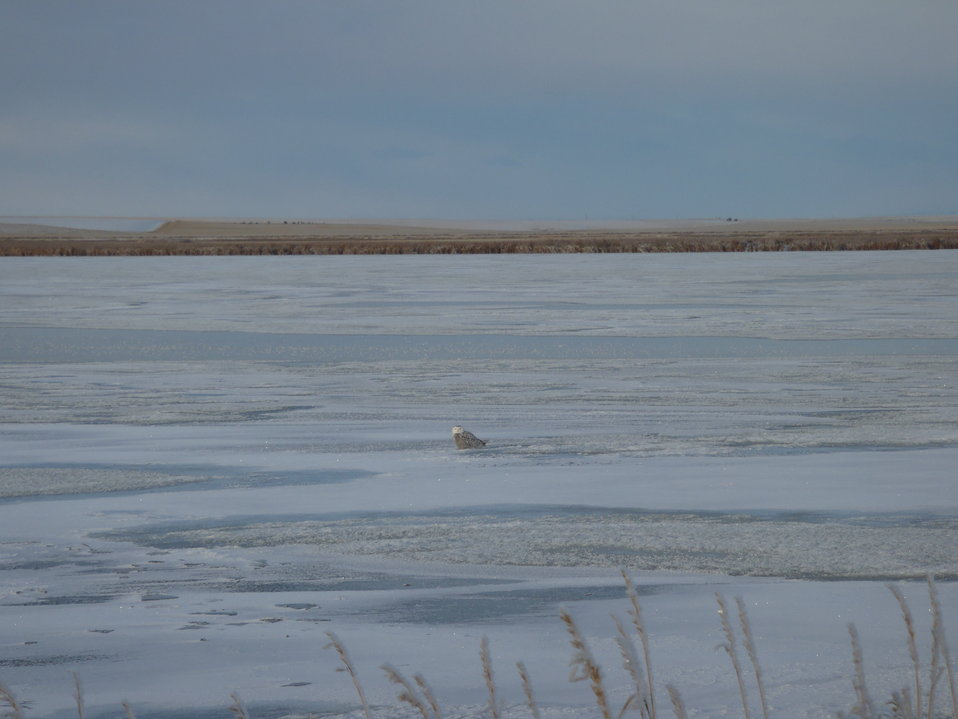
Snowy Owl

Every winter we get at least one really great Snowy Owl sighting on the Refuge! This Snowy Owl looks a little bit more at home in the snow!